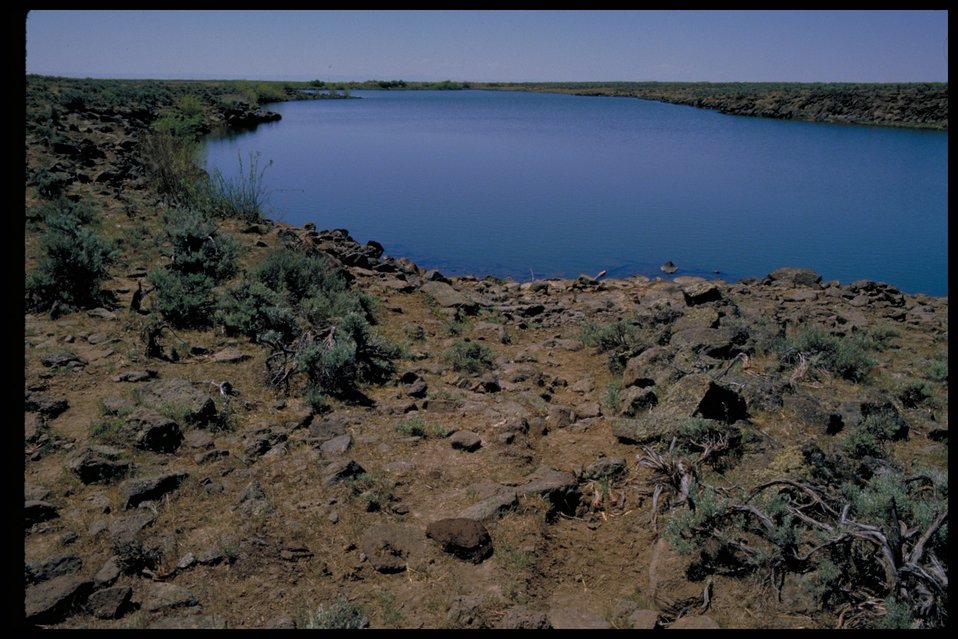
Oregon Trail near Emigrant Trail Reservoir Lower Snake River District